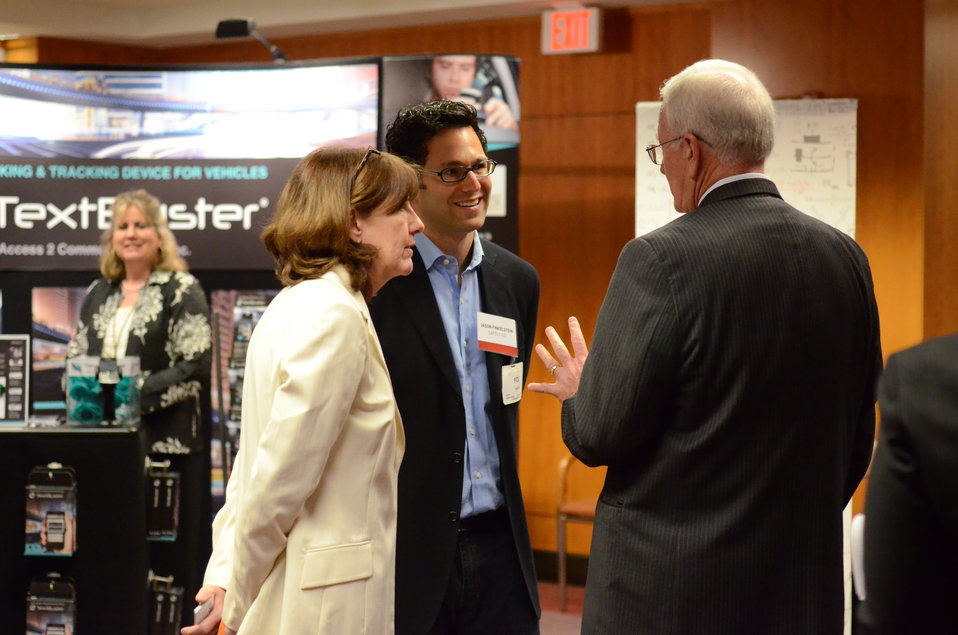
Distracted Driving Technology Showcase April 19, 2013